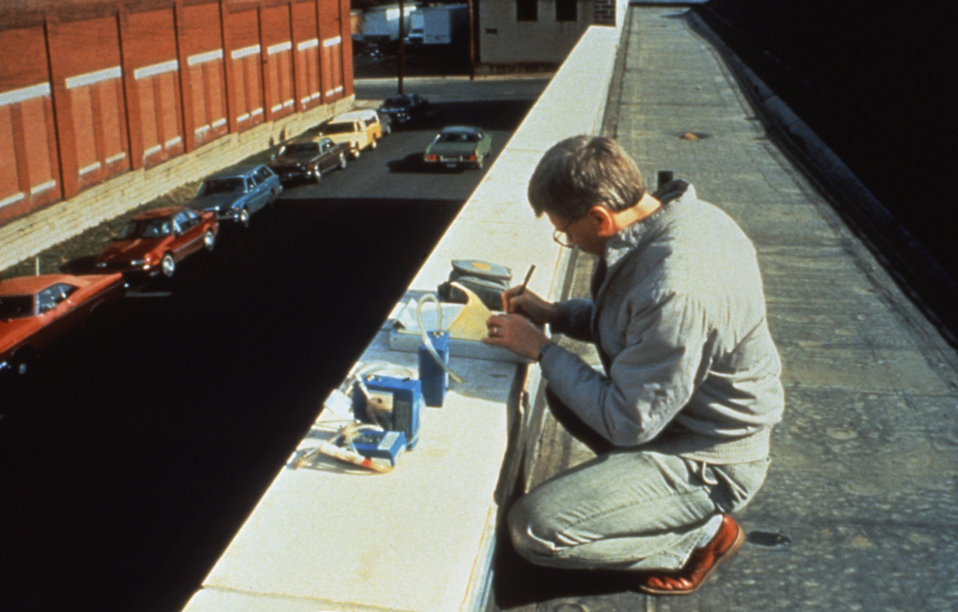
This CDC field officer was conducting a workplace-related health hazard evaluation.